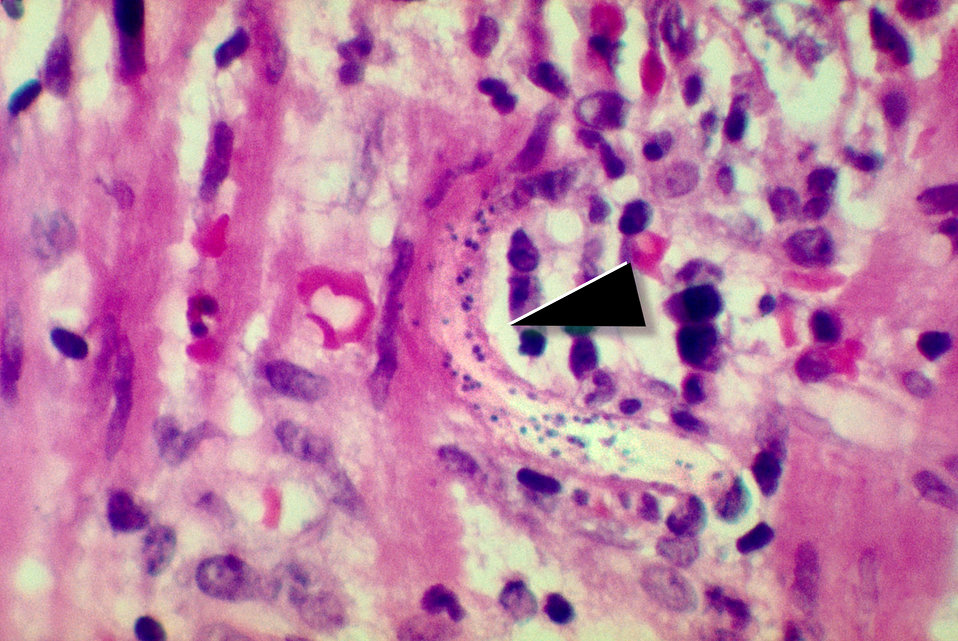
This micrograph reveals a Strongyloides stercoralis parasite embedded in the intestinal wall.